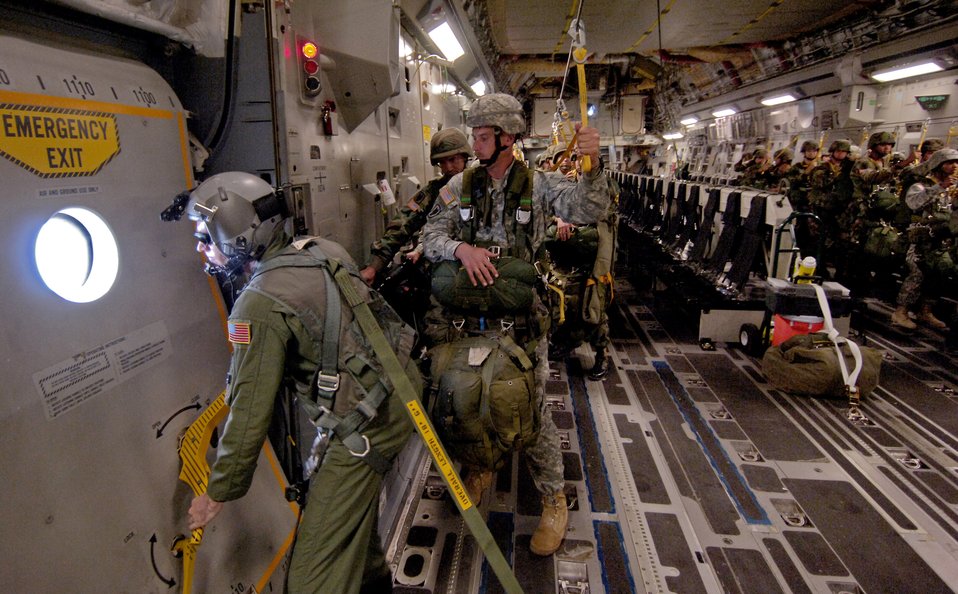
Joint Forcible Entry Exercise

Tech. Sgt. David Noel opens the troop door as Army paratroopers from the 35th Signal Battalion at Fort Bragg, N.C., prepare to jump out of a C-17 Globemaster III during a joint forcible entry exercise Aug. 21. JFEX is a joint Army and Air Force exercise designed to validate combat readiness training.